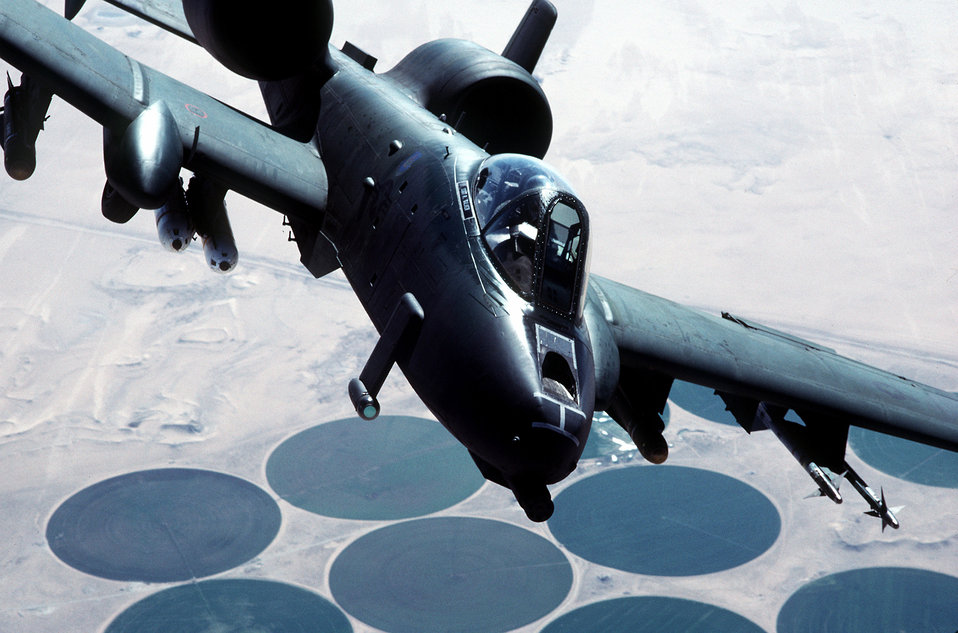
A-10A Thunderbolt II

1990's -- An A-10A Thunderbolt II aircraft flies over a target area during Operation Desert Storm.